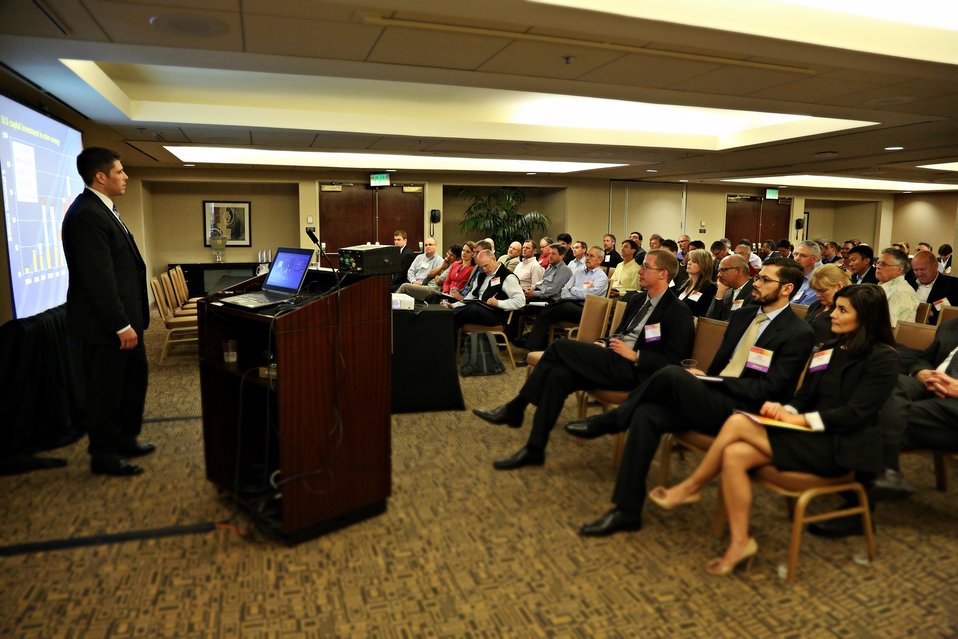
Day 2 Subprogram Overviews 9

SunShot staff speak at Subprogram Overview sessions.